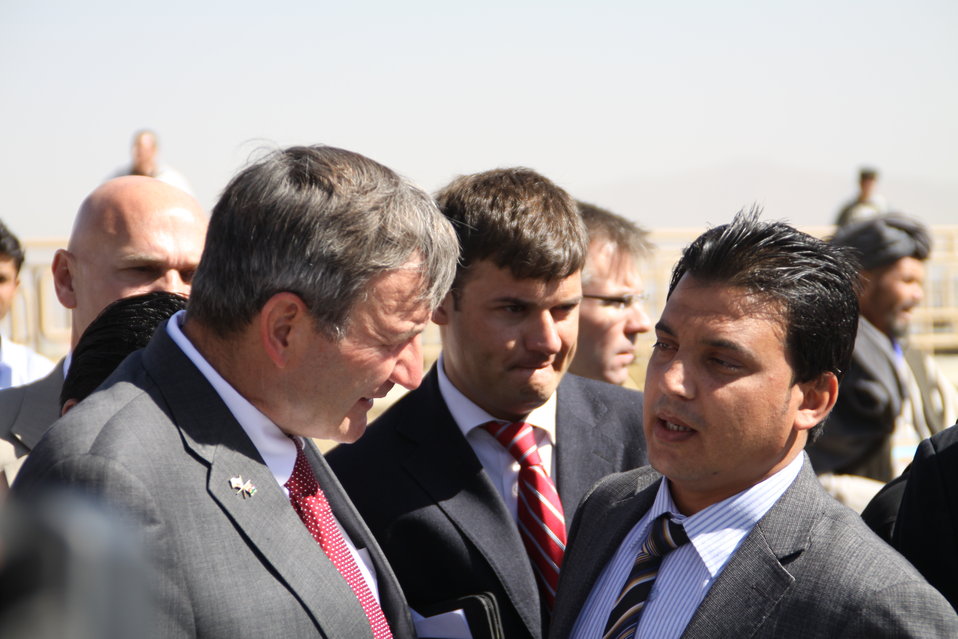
AVIPA Plus Wheat Seed Distribution 101005

US Ambassador Karl Eikenberry and USAID Acting Mission Director Kevin Brownawell joined the Minister of Agriculture, Irrigation and Livestock, H.E. Minister Mohammed Rahimi in signing a Memorandum of Understanding and distributing vouchers to area farmers for wheat and fertilizer.

US Ambassador Karl Eikenberry and USAID Acting Mission Director Kevin Brownawell joined the Minister of Agriculture, Irrigation and Livestock, H.E. Minister Mohammed Rahimi in signing a Memorandum of Understanding and distributing vouchers to area farmers for wheat and fertilizer.